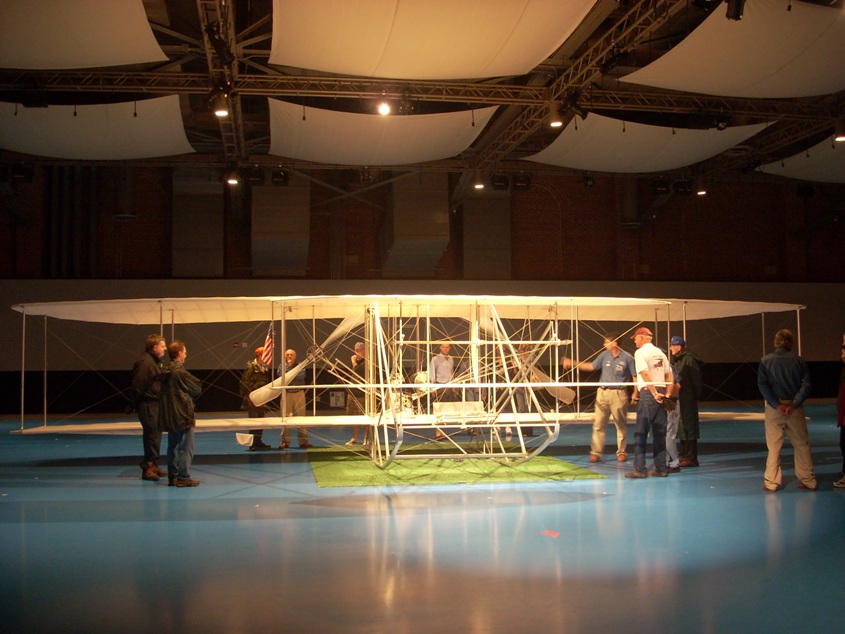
Wet celebration recognizes 100 years of military aviation

Visitors inspect a reproduction of the 1908 Wright aircraft Sept. 6, at Fort Myer, Va., during a Centennial of Military Aviation celebration.